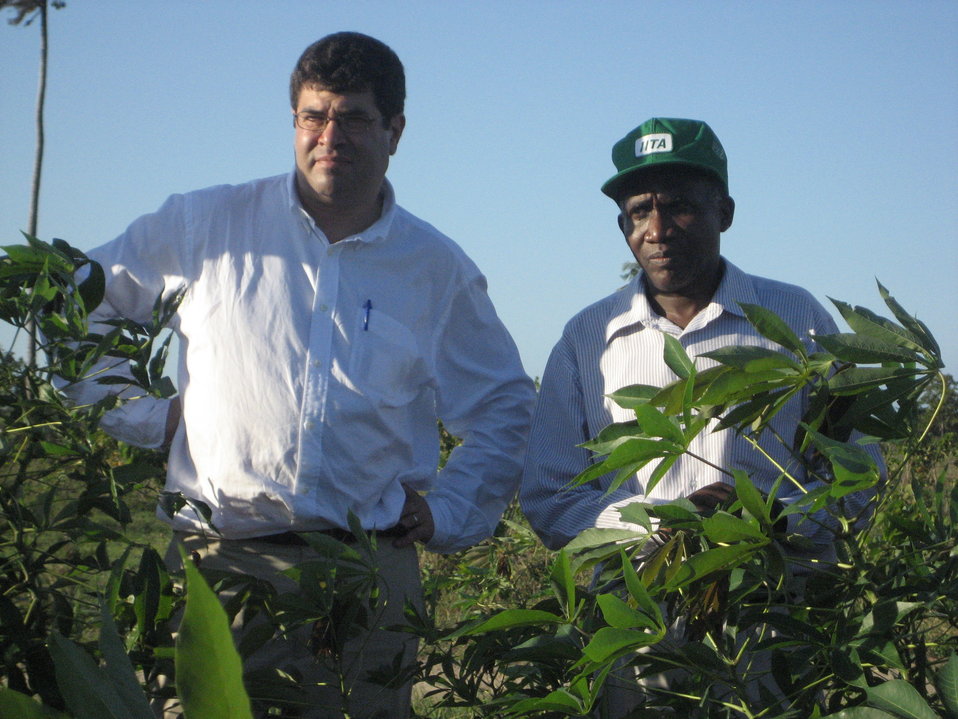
Deputy Secretary Neal Wolin’s trip to Africa 2009

Tanzania is one of the top five producers of cassava on the continent.